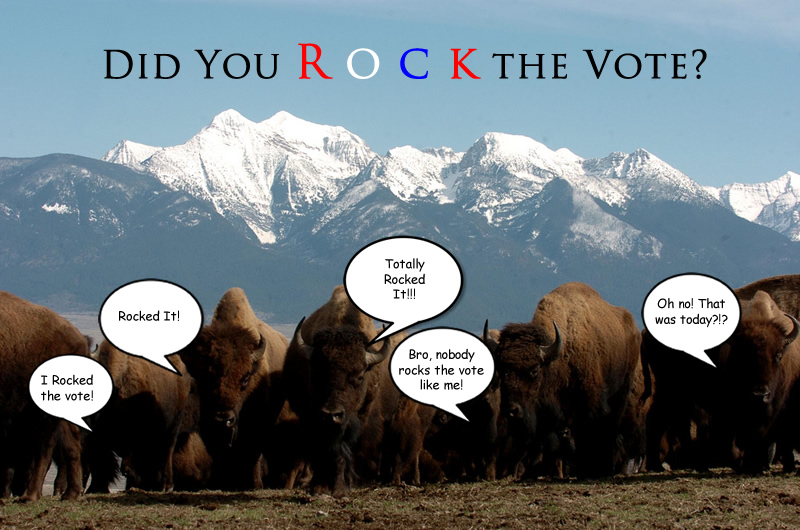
Rock the Vote!